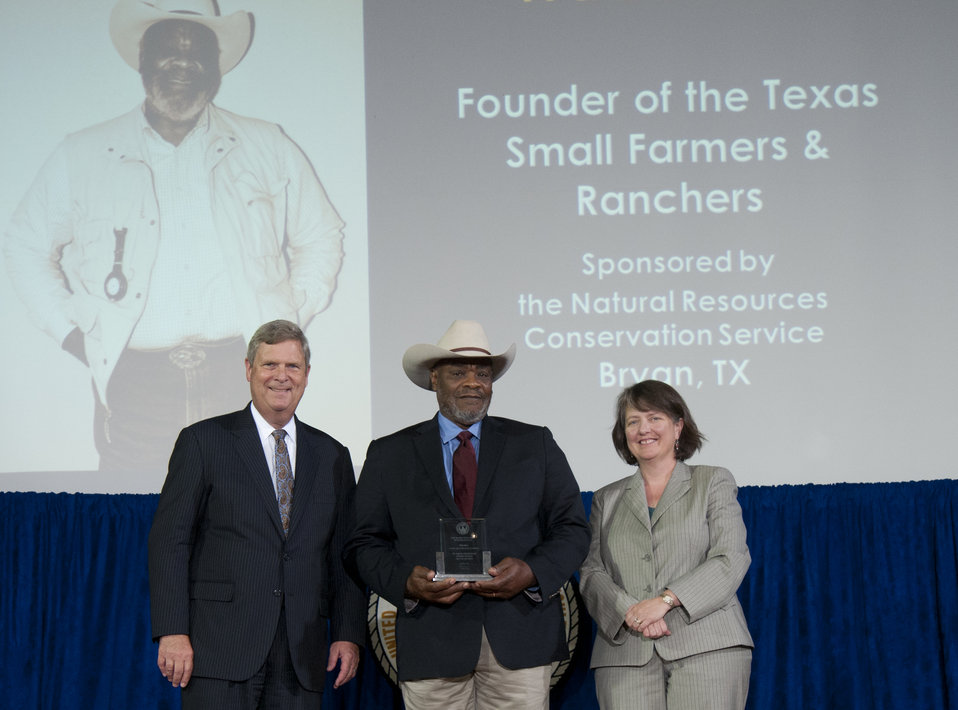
Agriculture Secretary Tom Vilsack and Agriculture Deputy Secretary Kathleen Merrigan present the Secretary’s Honor Award to Texas Small Farmers & Ranchers, Bryan, TX founder Wade Ross at the U.S. Department of Agriculture (USDA) 64th Annual Honor Awards Ceremony in Washington, D.C. on Wednesday, Sept. 12, 2012. Ross forged partnerships between government agencies and other entities leading to changes that promote sustainable agricultural client bases and healthy environments for rural and underserved communities.